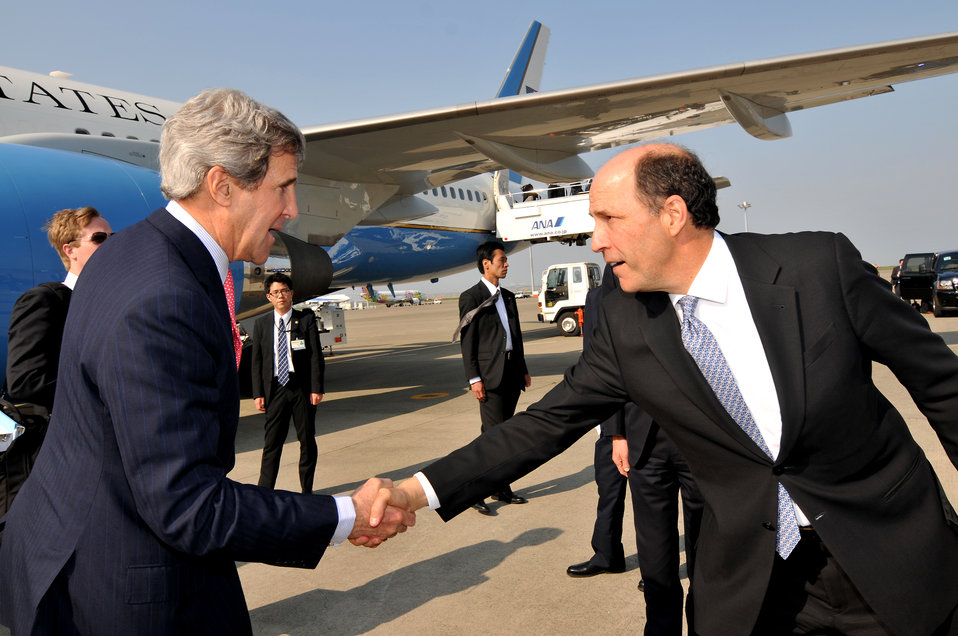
Secretary Kerry Bids Farewell to Ambassador Roos

U.S. Secretary of State John Kerry bids farewell to U.S. Ambassador to Japan John Roos before departing Tokyo, Japan, on April 15, 2013.